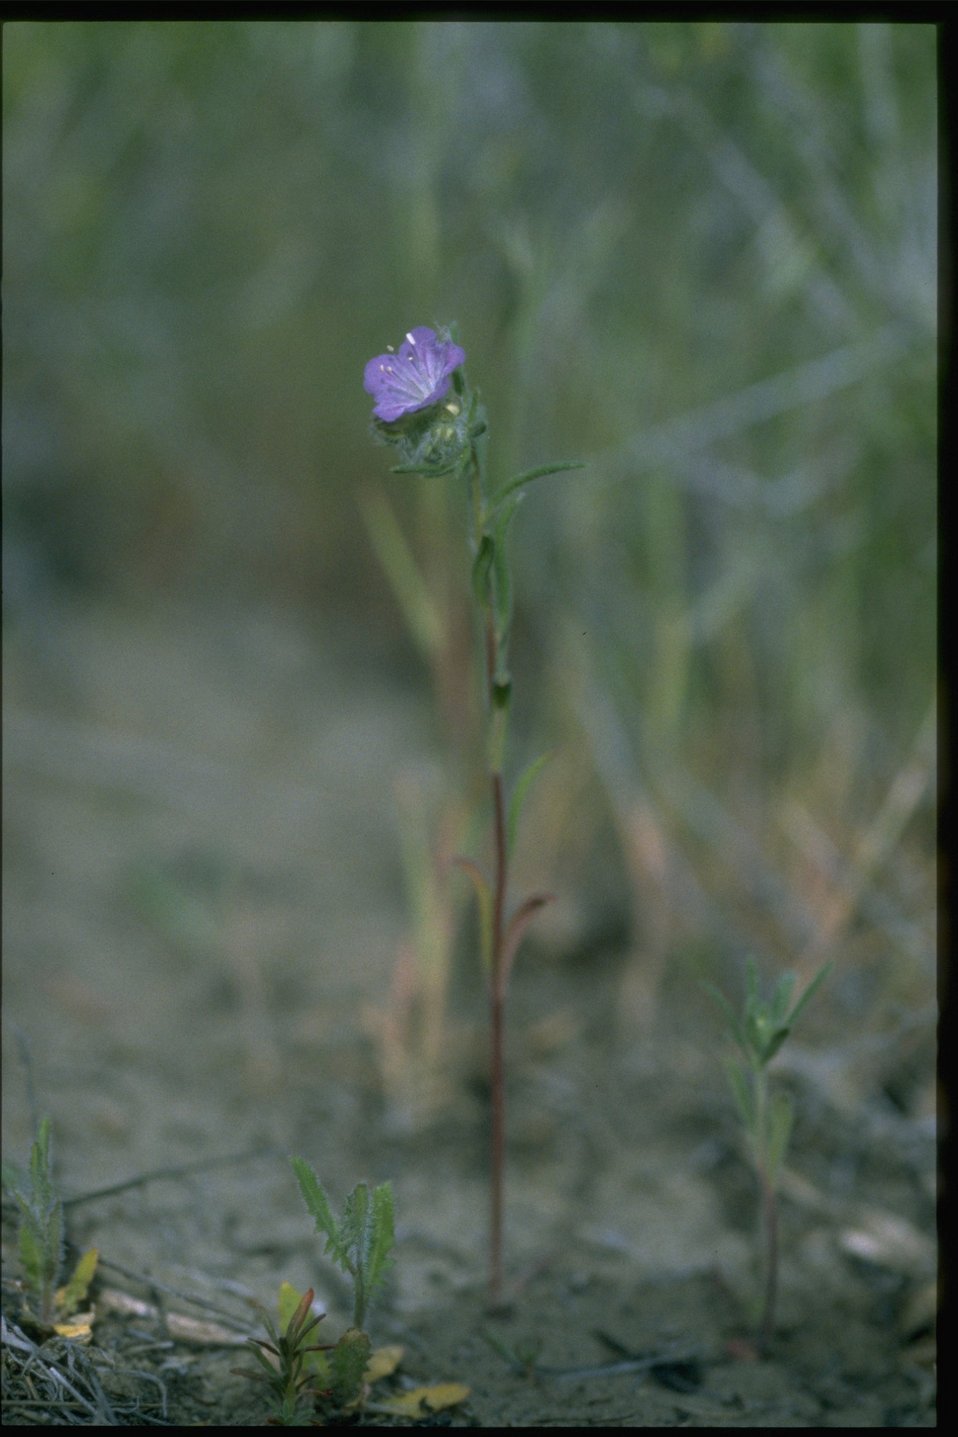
Medium shot of Phacelia wildflower.